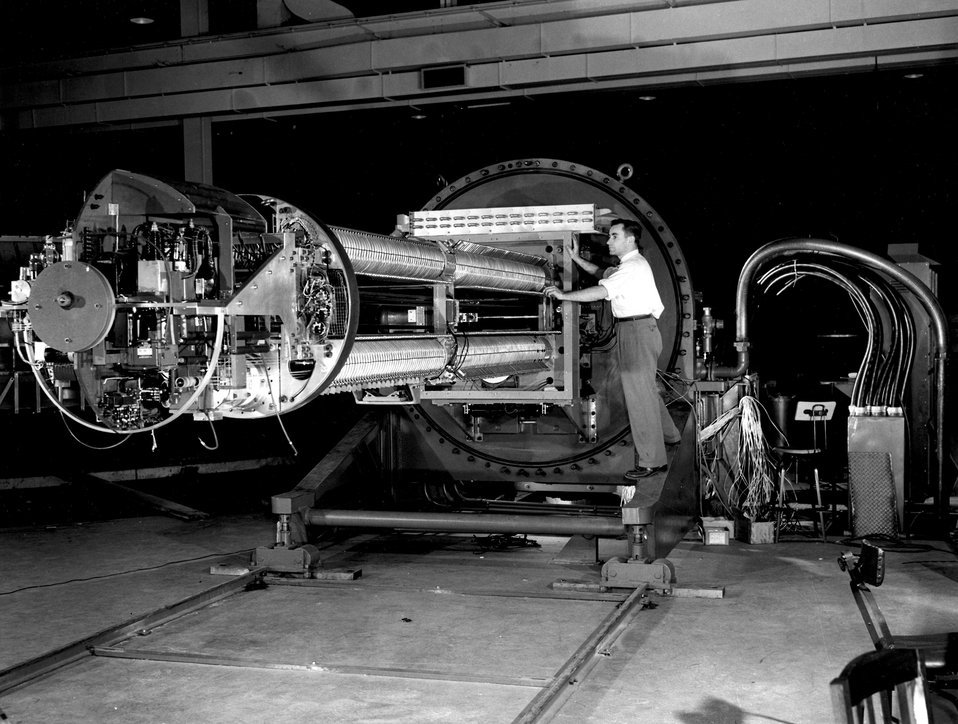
View of the cantilevered gradient column and high voltage head of the Van de Graaff injector.